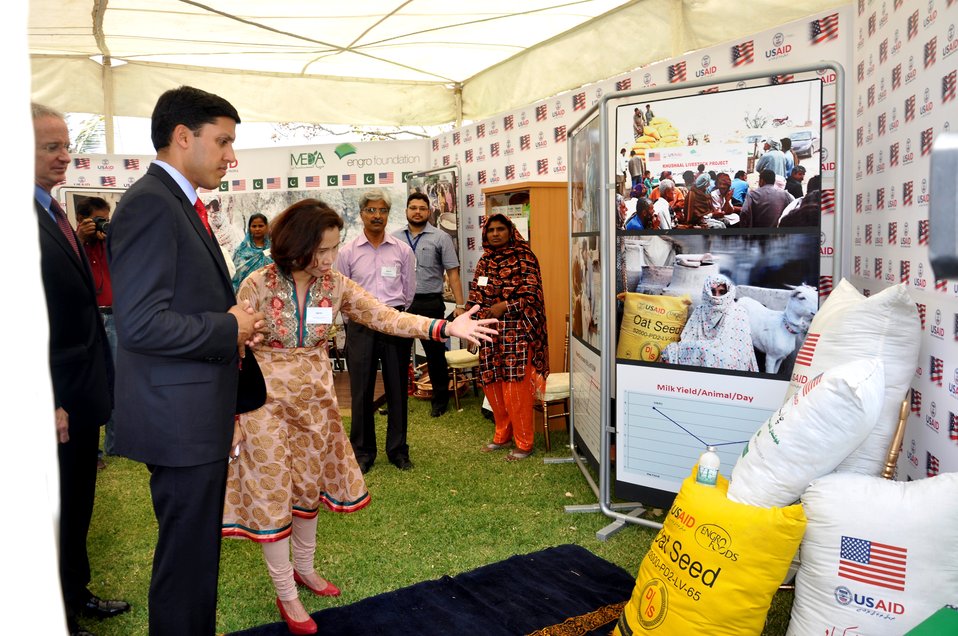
Entrepreneurs project Chief of Party while briefing project details to Dr. Shah